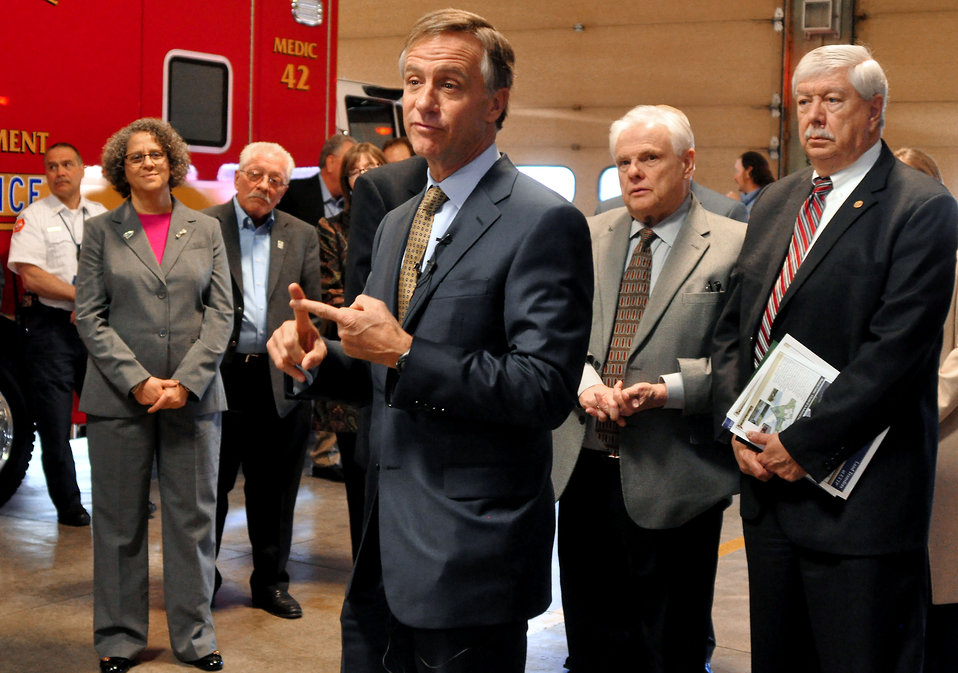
Gov. Bill Haslam Visit to ETTP 2014 Oak Ridge

14-037 DOE photo Lynn Freeny 3-21-2014 Oak Ridge Tennessee